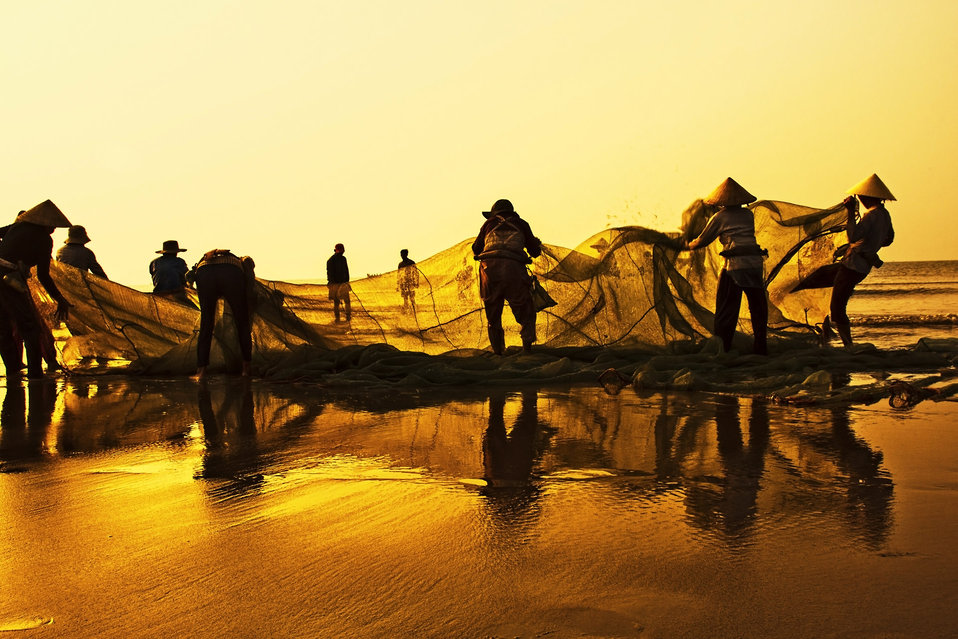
Fishing (6)

Fishing at sam son beach.